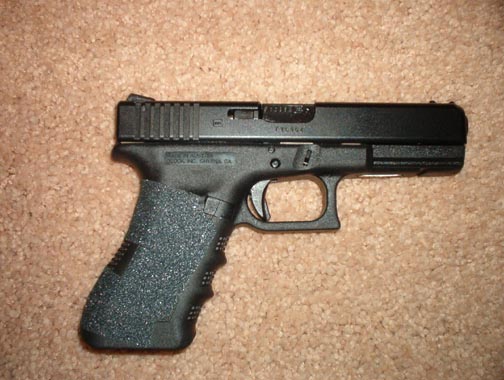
Glock 37 picture